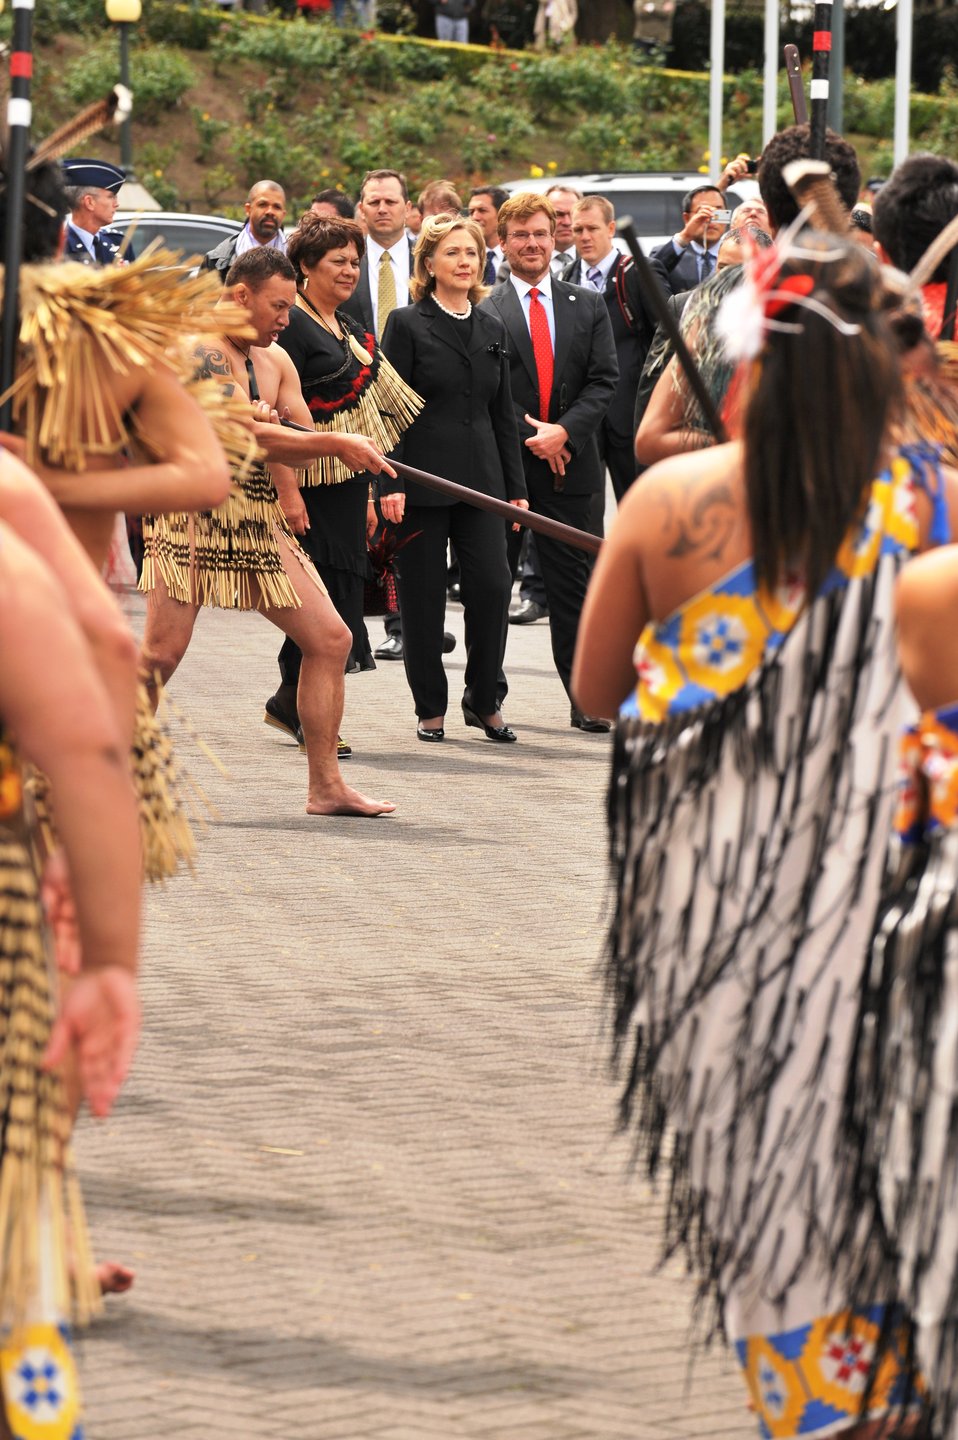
Secretary Clinton Walks With White-Tahuparae, Ambassador Heubner, and Albert to a Powhiri

U.S. Secretary of State Hillary Rodham Clinton walks with Rose White-Tahuparae (left of the Secretary), U.S. Ambassador to New Zealand David Huebner (immediate right of the Secretary with the red tie) and Gerrard Albert (right of the Secretary) to a Powhiri, a Maori welcoming ceremony, on the Parliament forecourt in Wellington, New Zealand, on November 4, 2010.